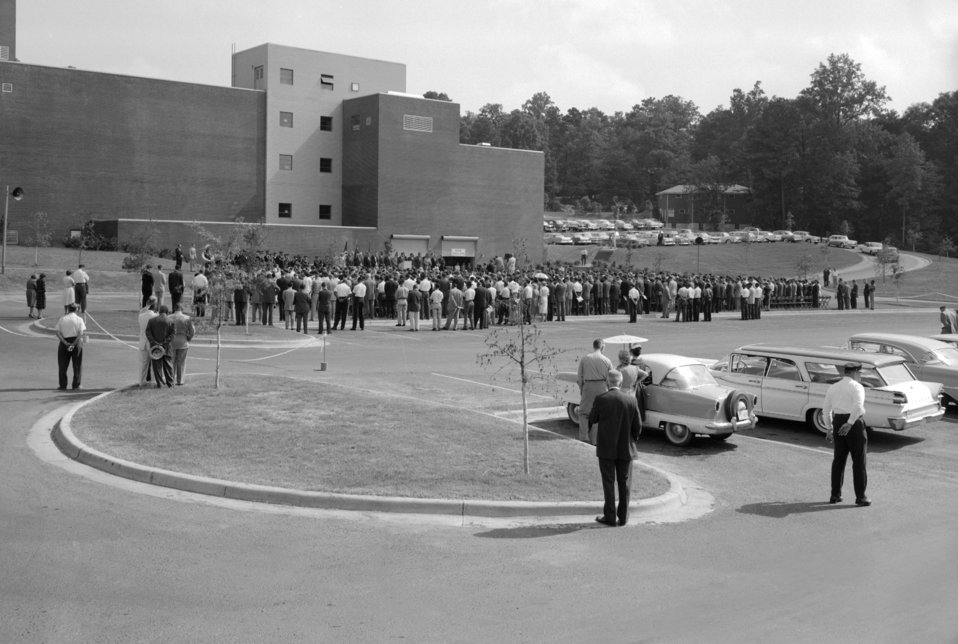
A 1960 CDC Dedication Ceremony looking at the rear of Bldg. 3.